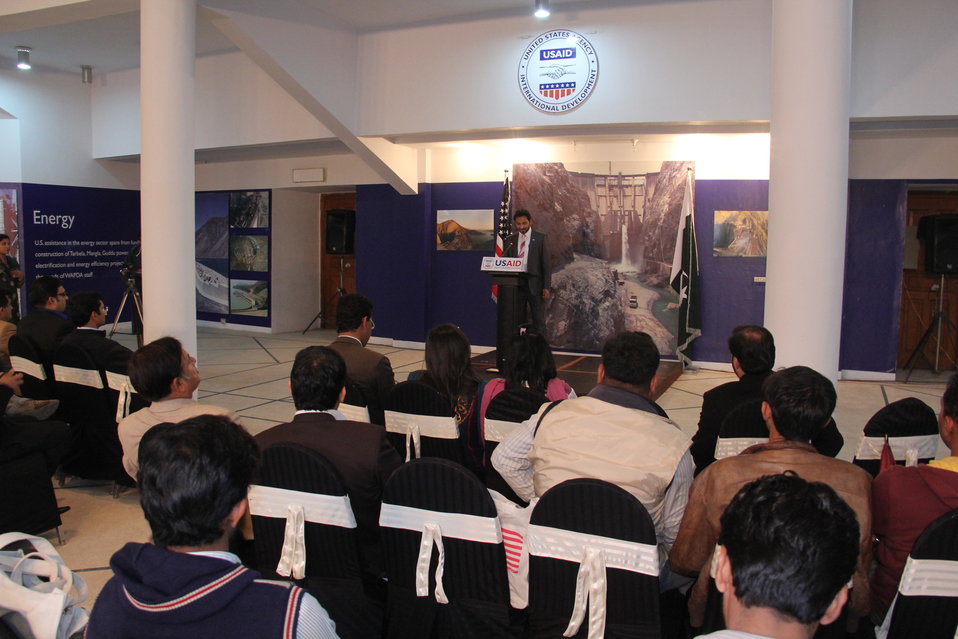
The exhibition at the Multan Arts Council is open to the public, free of charge, and runs through February 28, 2013.